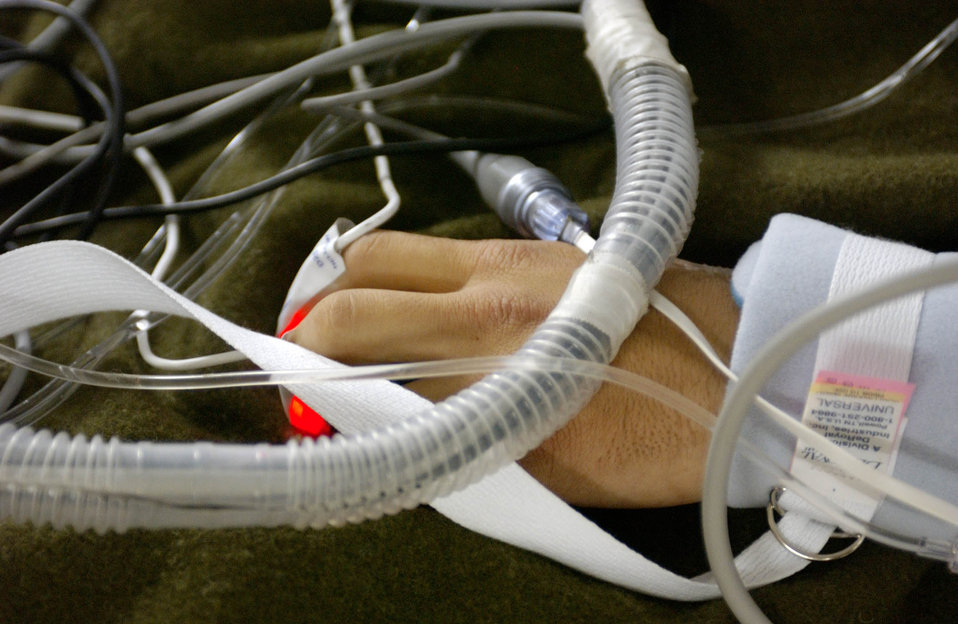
Intensive care in the air

BALAD AIR BASE, Iraq -- Wires and tubes connect a critically injured patient with machines that monitor the status and administer medication at the intensive care unit at the Air Force Theater Hospital here. The patient was later flown to Germany by a three-person critical-care air-transport team from Ramstein Air Base, Germany.